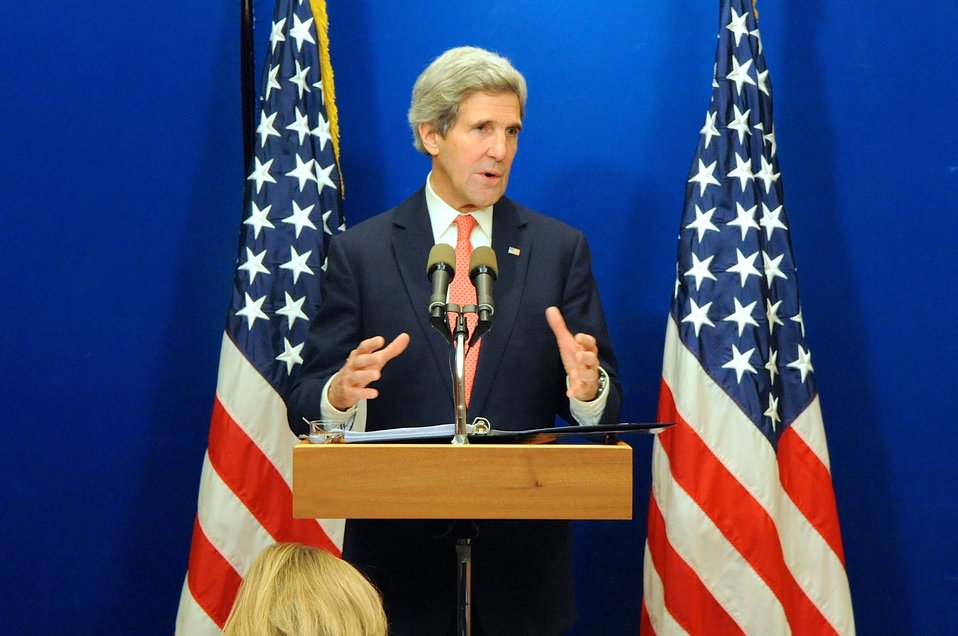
Secretary Kerry Discusses Middle East Peace Talks During News Conference

U.S. Secretary of State John Kerry updates his traveling press corps on the status of his Middle East peace negotiations before departing Jerusalem and Israel for further talks in Jordan and Saudi Arabia on January 5, 2014.